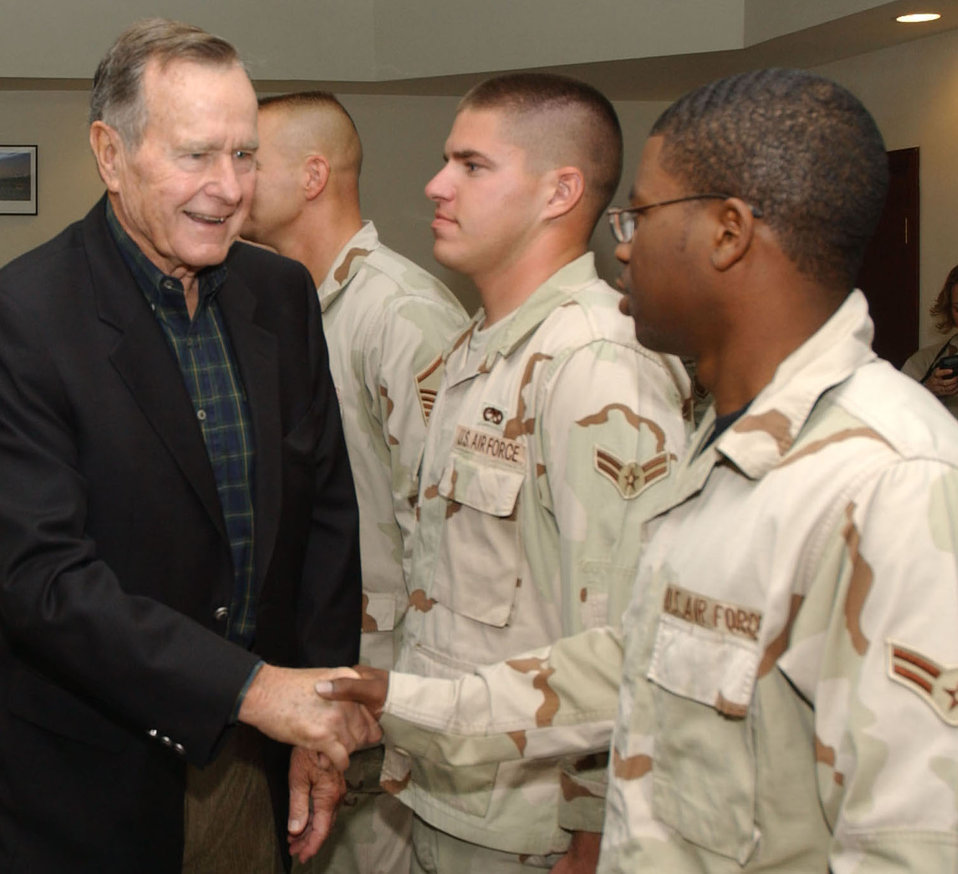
Former president visits deployed troops

SOUTHWEST ASIA (AFPN) -- Former President George H. W. Bush, shakes hands with Airman 1st Class Christopher Trotter during the former president's visit this week to a deployed location in Southwest Asia. Airman Trotter is deployed from Spangdahlem Air Base, Germany. To his right is Airman 1st Class Joseph Smigielski, deployed from Dyess Air Force Base, Texas.